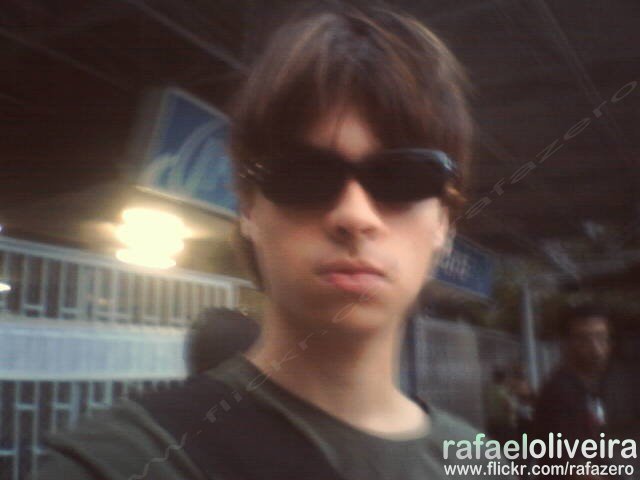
It's my picture Português: Essa é a minha foto